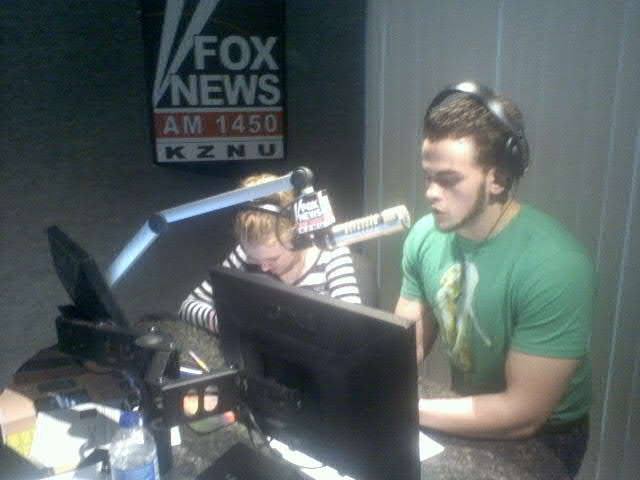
WCYC Teens Step Up to the Mic During NDFW

Southern Utah's Washington County Youth Coalition participated in NDFW 2014 by going into High Schools with an anonymous form for our Teens. This form allowed Teens to ask the hard questions about Drugs that they might not dare ask anyone else. The WCYC Then answered these questions on their Facebook Page, and also went on the Radio!! Teens were made aware of the Radio show at each High School, and some of the WCYC were also allowed to answer questions daily on their school intercoms. Image is of two youth chosen to go on the Radio. Besides answering questions already asked, the WCYC also took live calls from Teens.